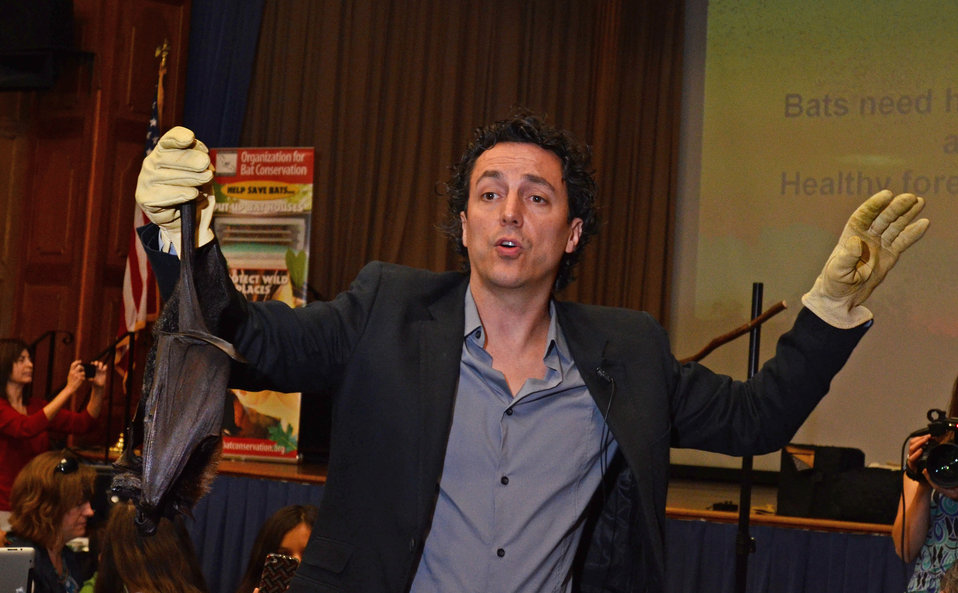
Rob Mies, author, director, and founder of the Organization for Bat Conservation gives a presentation sponsored by the U.S. Forest Service in U.S. Department of Agriculture's, Jefferson Auditiorium, Washington, D.C., Wednesday, May 16, 2012.